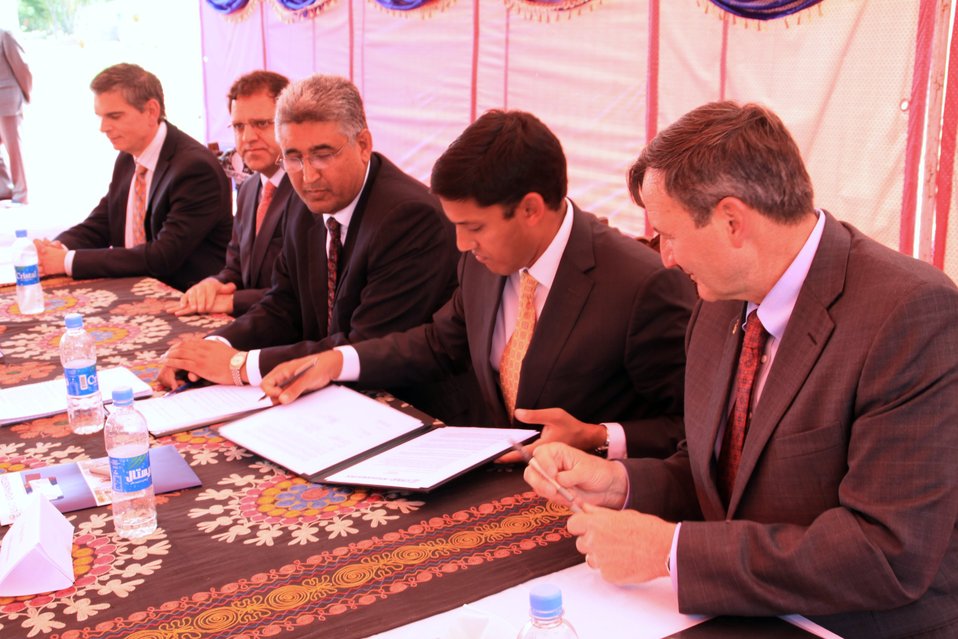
دهاقین افغان دسترسی بیشتر به قرضه را از طریق 100 میلیون دالرمساعدت مالی برای انکشاف زراعتی بدست آوردند